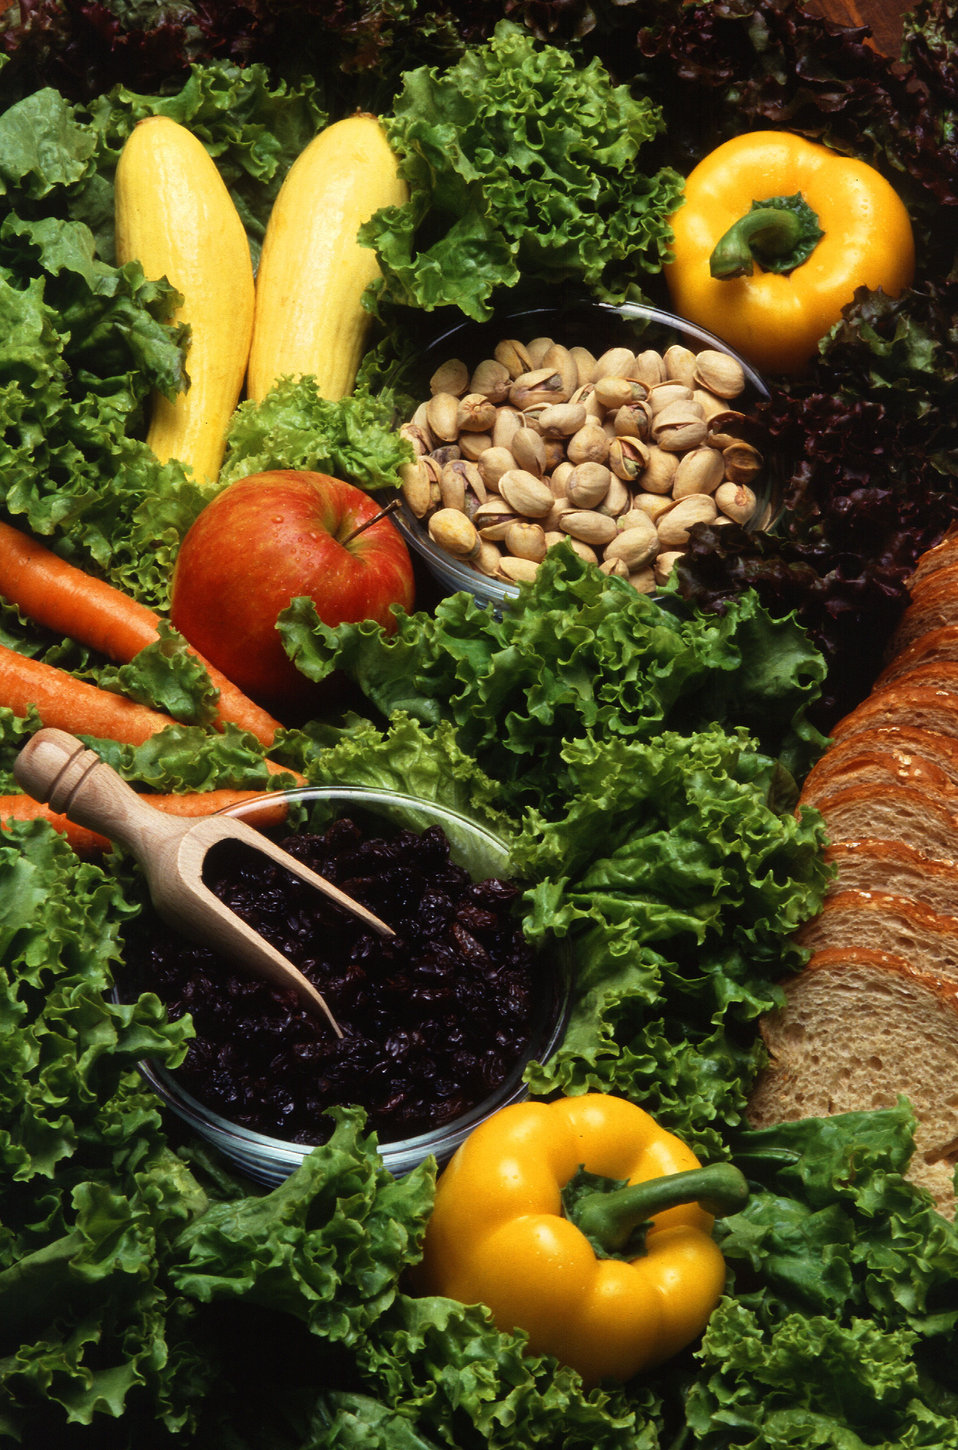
Volunteers ate these foods during a study of how plant-rich diets affect blood lipids, antioxidant defenses, and colon function.